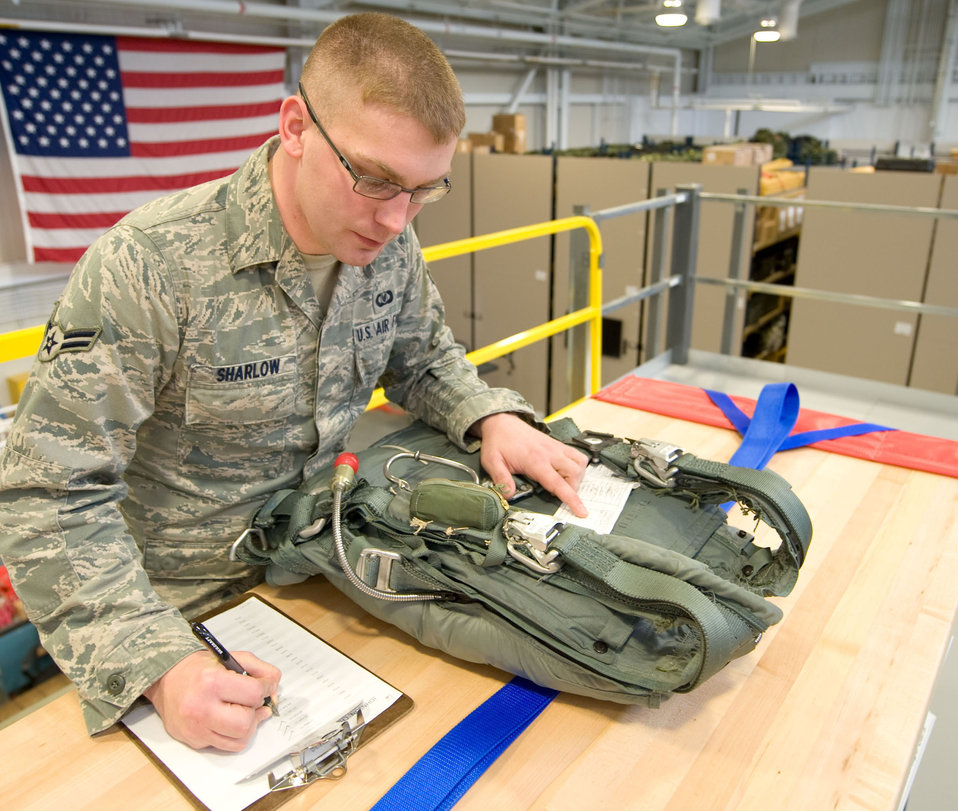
Airman creates important database

Airman 1st Class Chris Sharlow, 436th Operations Support Squadron Aircrew Flight Equipment journeyman, performs an inspection on a parachute at Dover Air Force Base, Del. on Nov. 30, 2012. He is the creator of a new computer program used to easily track thousands of accountable aircrew equipment items. Sharlow's program is known as the Flight Equipment Automated Records Systems (FEARS) and is being used to ensure tracking and on-time inspections of items critical to safe, efficient mission accomplishment.